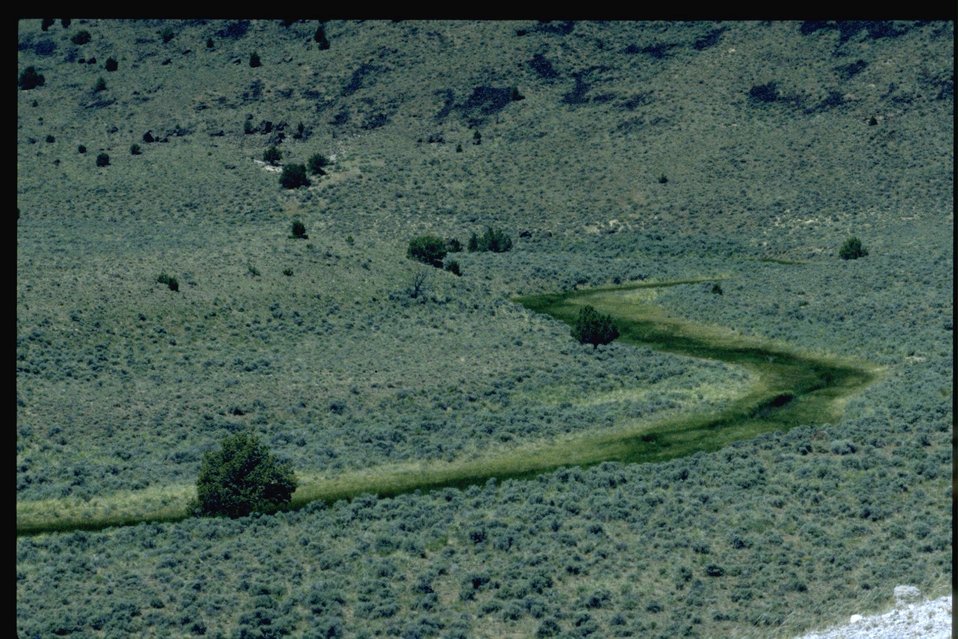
Scenic view of Guano Creek.